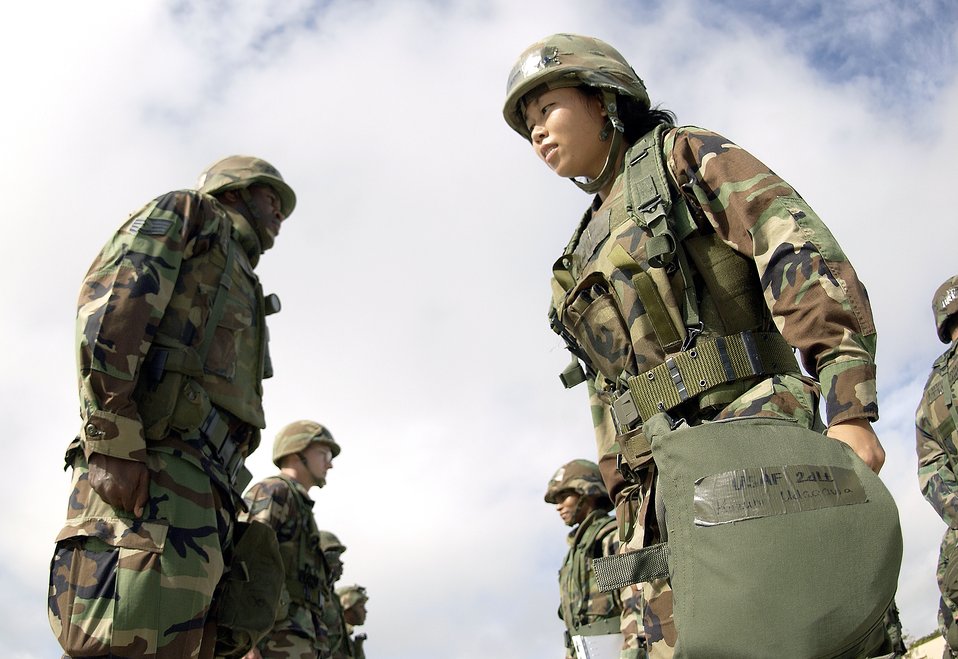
Deployment check

ANDERSEN AIR FORCE BASE, Guam (AFPN) -- 2nd Lt. Kazumi Udagawa inspects Staff Sergeant Damien Seals during an open ranks inspection. The 36th Civil Engineering Squadron here holds regular inspections to ensure troops have all of their necessary equipment for deployment.